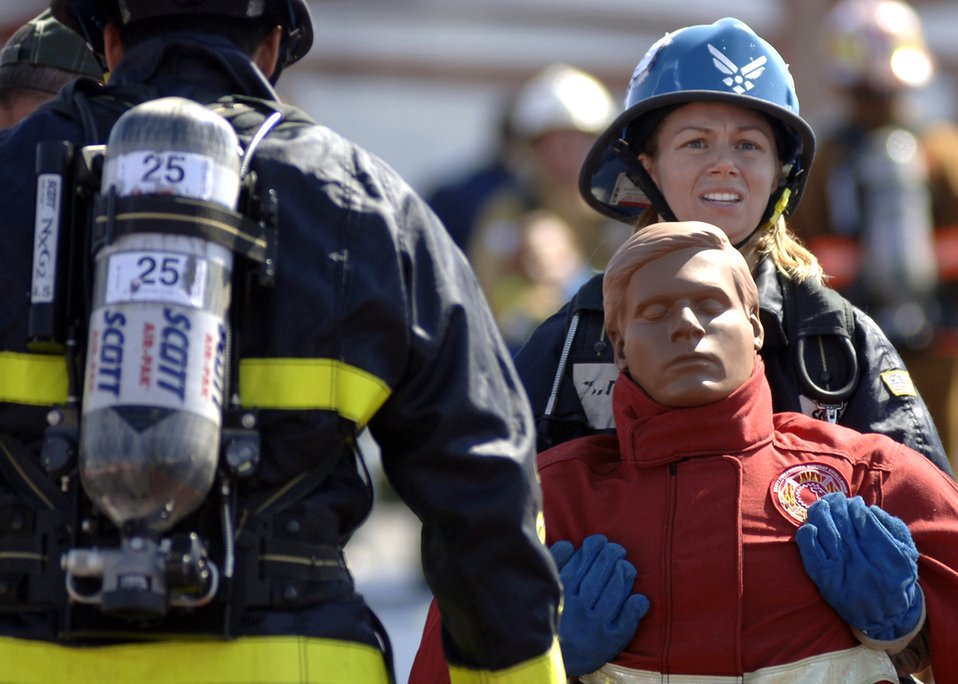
Tandem Carry

Shenah Groom, a firefighter from Travis Air Force Base, Calif., carries a 175 pound dummy to the finish line during the Firefighter Combat Competition at Morrow, Ga., Oct. 13. The national competition featured more than 450 firefighters from around the U.S.